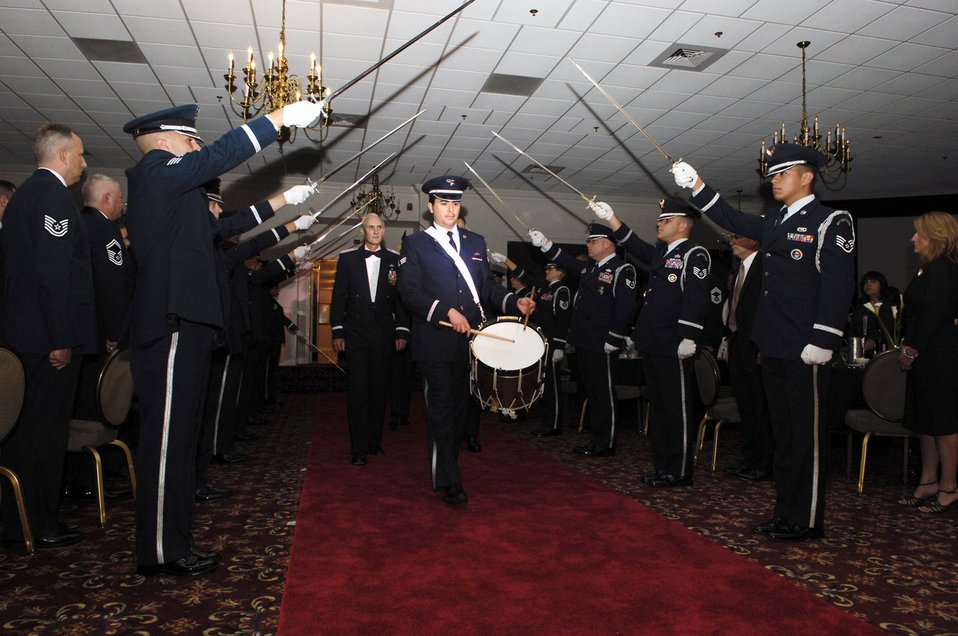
Former ESC commander receives Order of the Sword

Retired Lt. Gen. Charles L. Johnson II is escorted through an Honor Guard sword cordon during a ceremony June 20 at Hanscom Air Force Base, Mass. General Johnson was inducted into the Air Force Materiel Command Order of the Sword. The Order of the Sword is the highest honor that Air Force NCOs can bestow upon an individual. General Johnson is the former Electronic Systems Center commander.